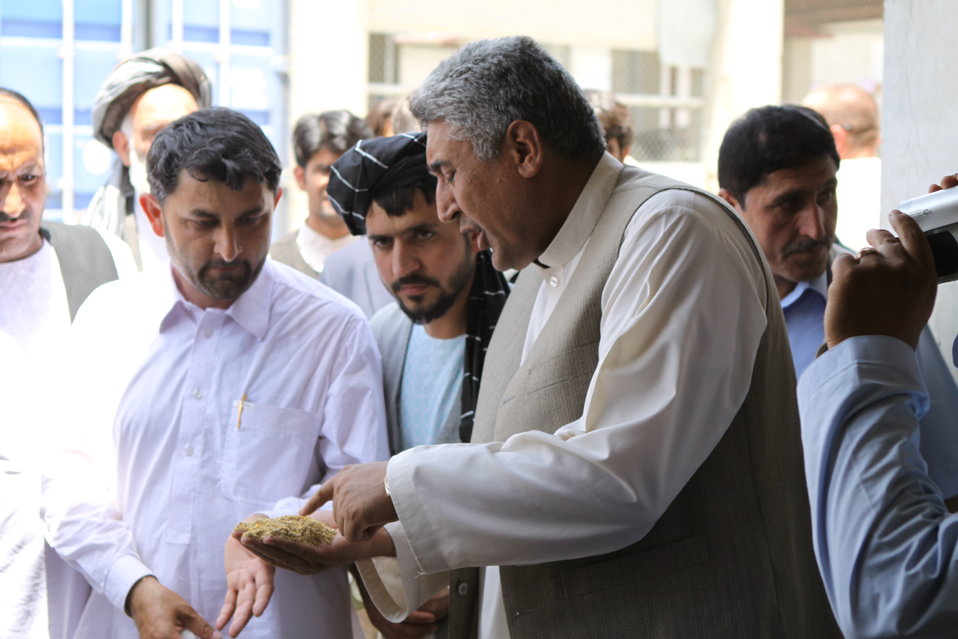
Bolan Poultry Farm